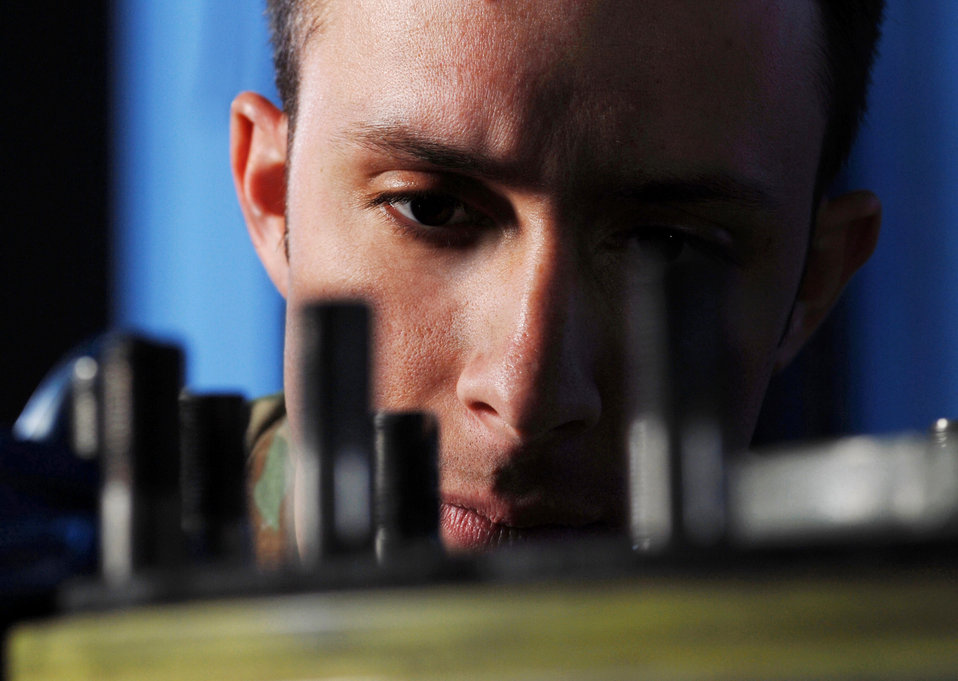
It's time to re-tire

Staff Sgt. Greg Thompson, an aircraft mechanic from the Aero Repair Shop at March Air Reserve Base, Calif., visually inspects the bolts Feb. 3 on a C-17 Globemaster III cargo aircraft wheel. March ARB, located in Southern California, is home to the largest air mobility wing in the Air Force Reserve Command. It also is home to units from the Army Reserve, Navy Reserve, Marine Corps Reserve and Air National Guard.